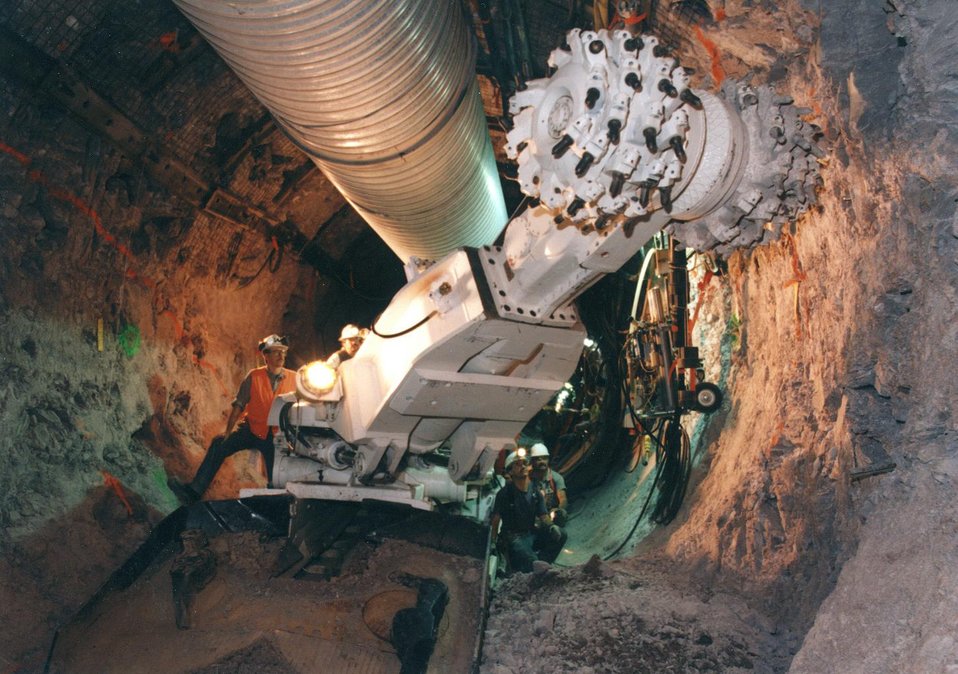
ALPINE MINING MACHINES EXCAVATE ALCOVES AND NICHES FOR SCIENTIFIC TESTING IN THE EXPLORATORY STUDIES FACILITY AT YUCCA MOUNTAIN.

THE EXPLORATORY STUDIES FACILITY, IS THE SITE AT YUCCA MOUNTAIN WHERE SCIENTISTS PERFORM THOUSANDS OF STUDIES ON THE SITE'S GEOLOGY, HYDROLOGY, CHEMISTRY AND CLIMATE. THE STUDIES DETERMINE YUCCA MOUNTAIN'S SUITABILITY AS THE NATION'S FIRST REPOSITORY FOR HIGH LEVEL WASTE.